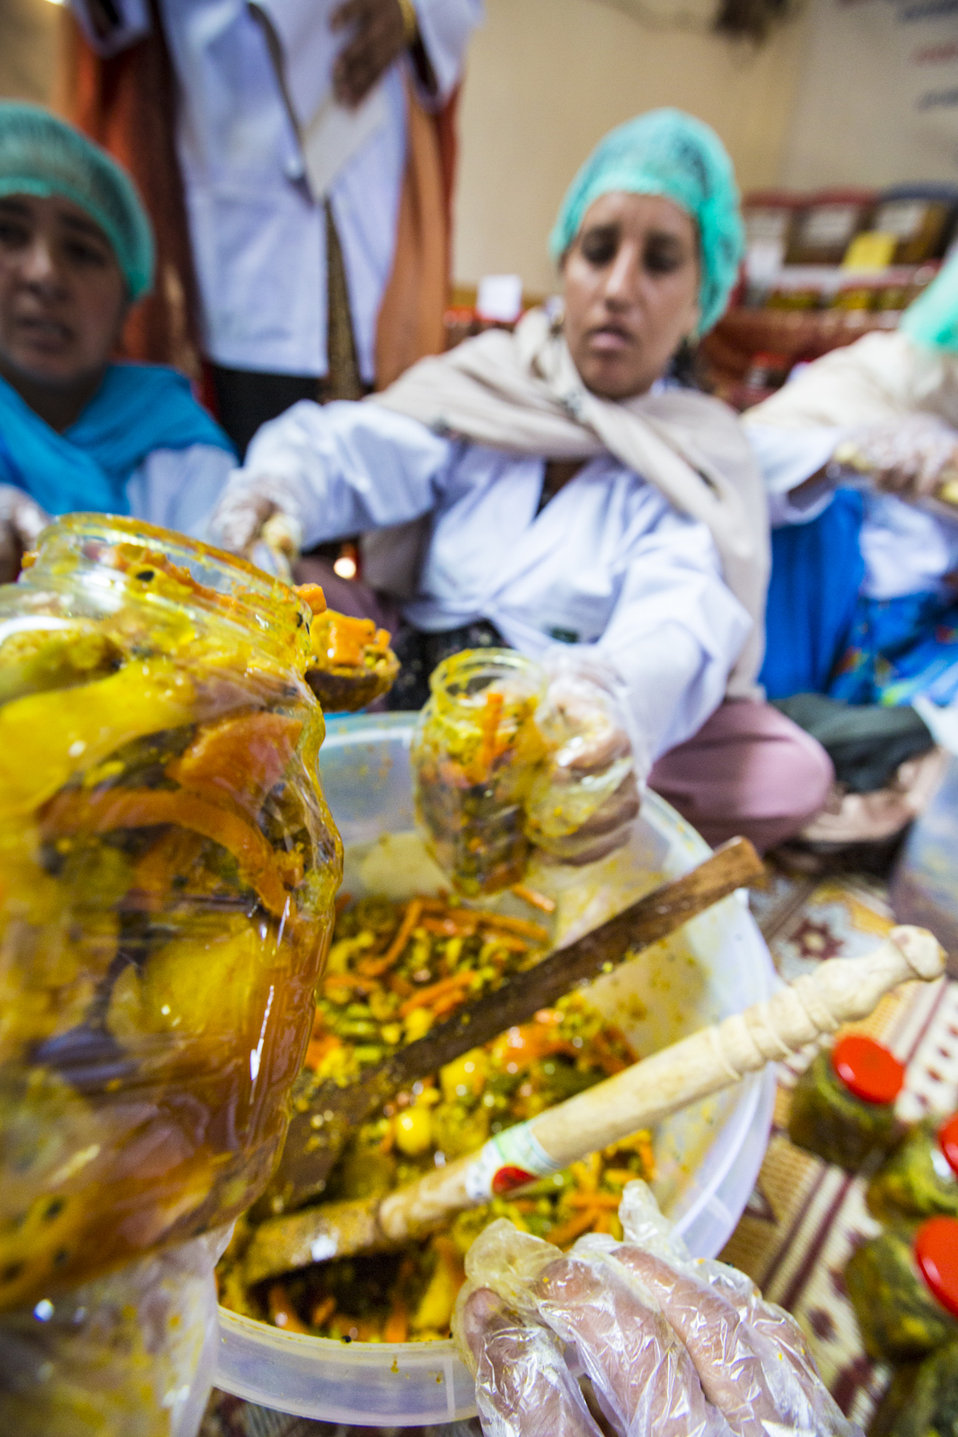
USAID's Agribusiness Project Women FEG for Food Processing - Pickle Production at Village Jabbi

The group is diverse. From their 20s to their 50s, some of the women are married, while some are single.
www.usaid.gov/pk/db/sectors/growth/project 750.html